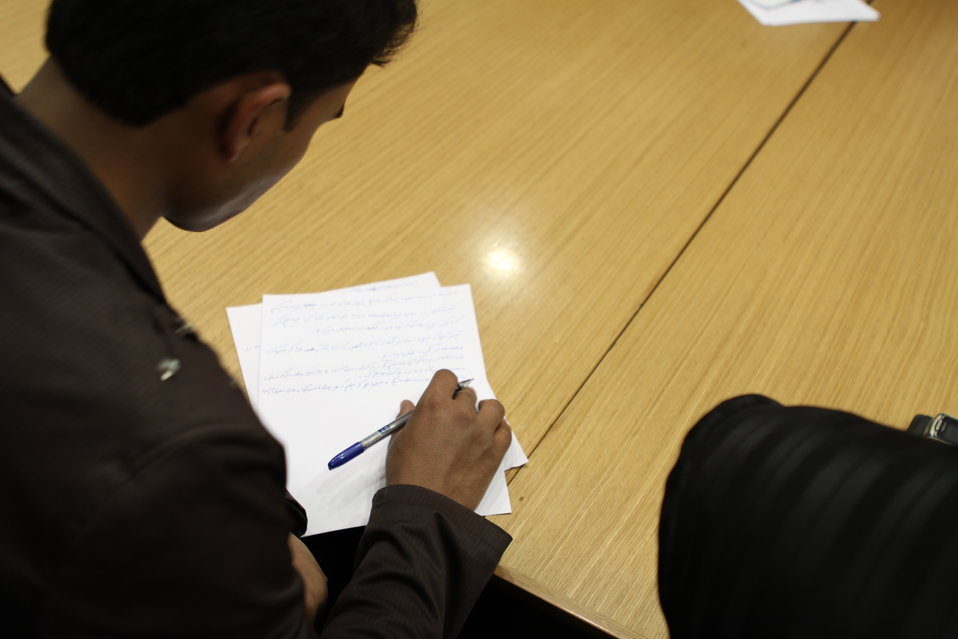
USAID Mission Director Earl Gast Conducts a Media Roundtable with Afghan Media, March 17, 2011